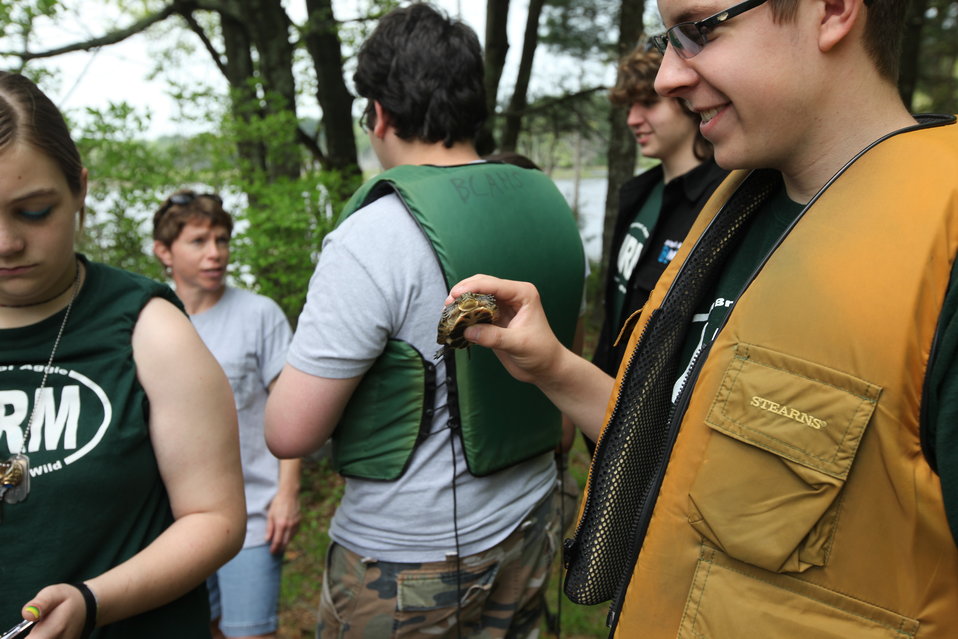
Kids Getting Ready to Release Turtles

Blanding's turtle release, Assabet River, MA.